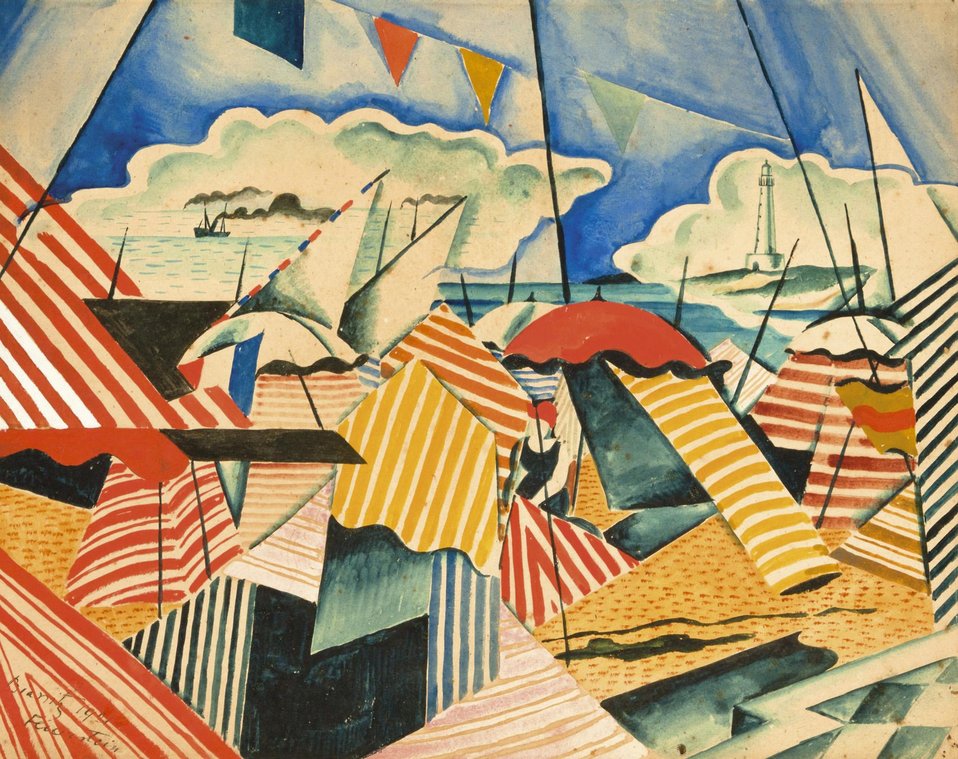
Deutsch: Biarritz, links unten signiert, datiert und gekennzeichnet: Feuerstein 1921 Biarritz, kombinierte Technik/Papier, 39 x 49 cm